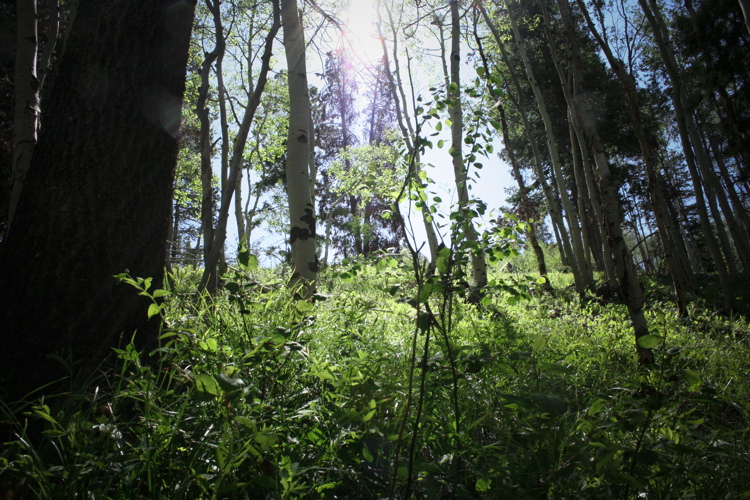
Uploaded at the request of Bryan A. McCarty

Taken in Avon, Colorado

The green of nature makes me feel alive. There's something beautiful about the organic life.